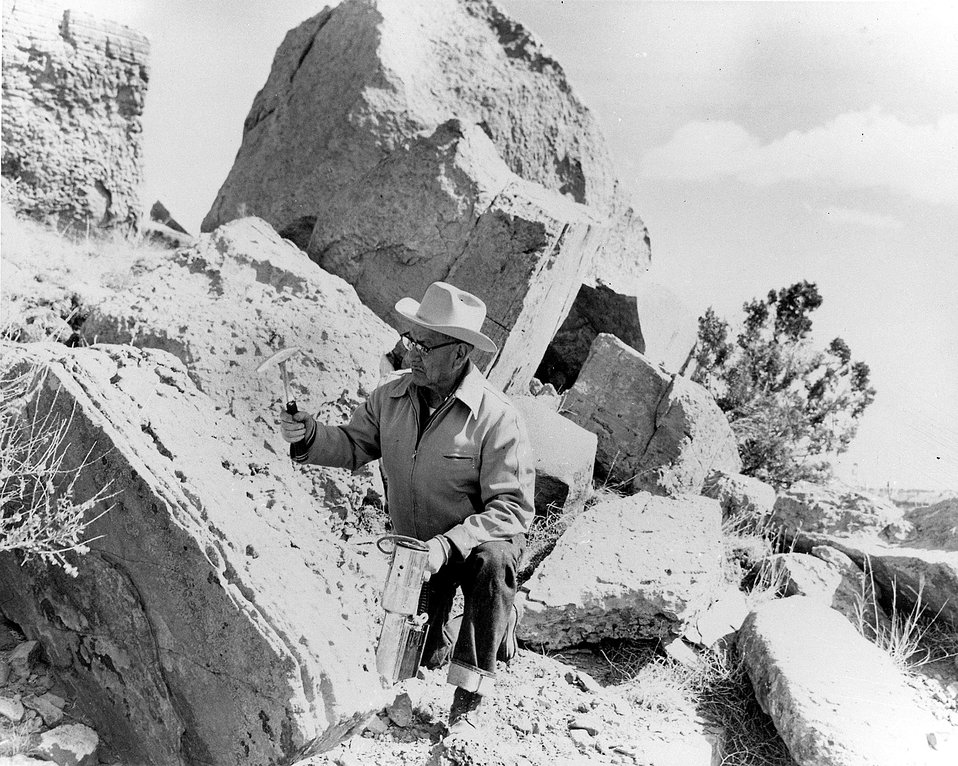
Prospector at work collecting ore samples. c. 1964